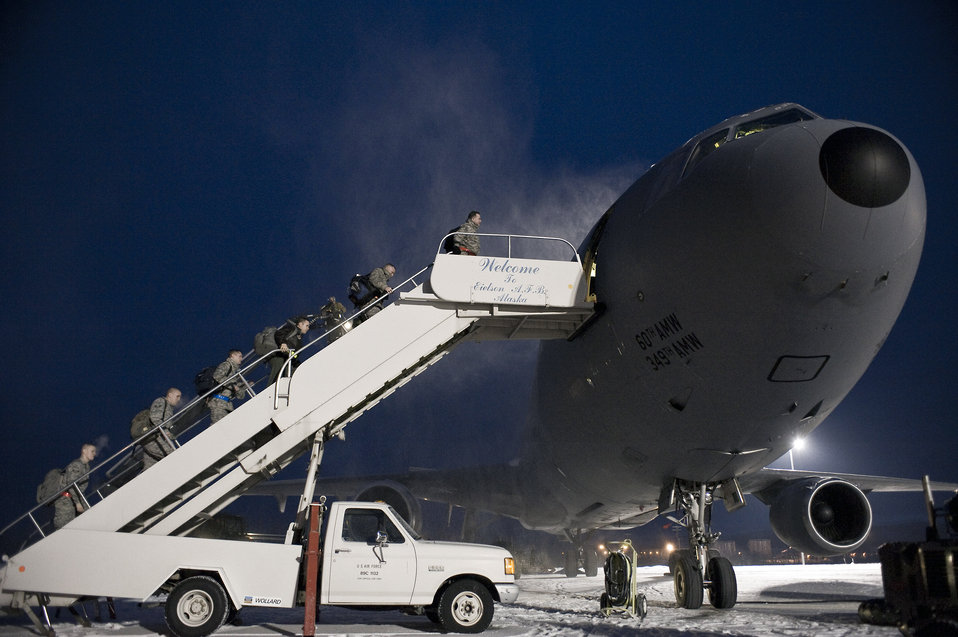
Eielson Airmen start winter road show in Hawaii

Airmen of the 354th Aircraft Maintenance Squadron board a KC-10 Extender Dec. 4 as they depart Eielson Air Force Base, Alaska. They left for Hickam AFB, Hawaii, where the members of the 18th Aggressor Squadron will provide expert threat academics Pacific Air Forces pilots.